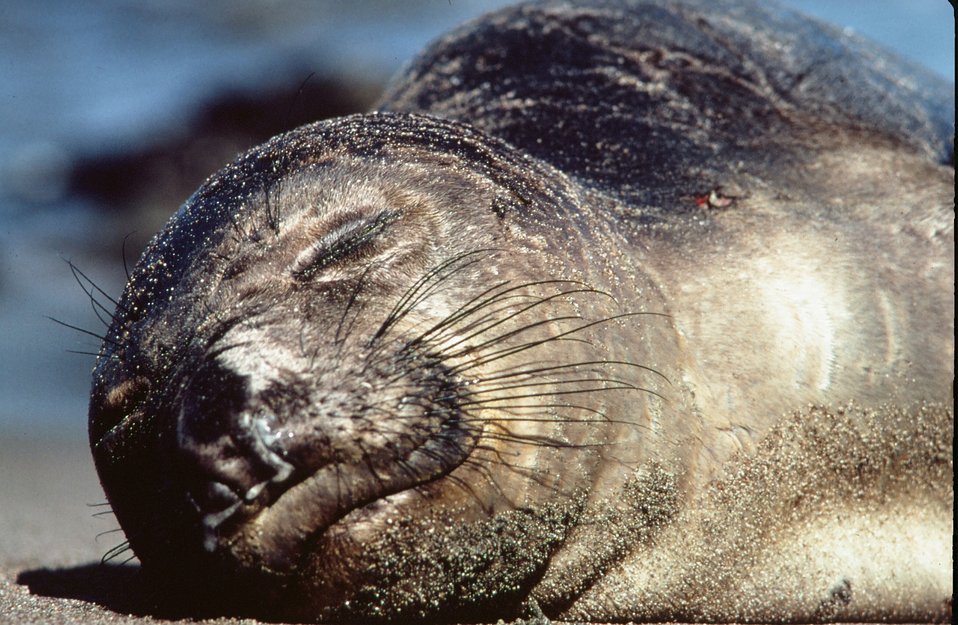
Elephant seal

An elephant seal taking a nap in the sun.